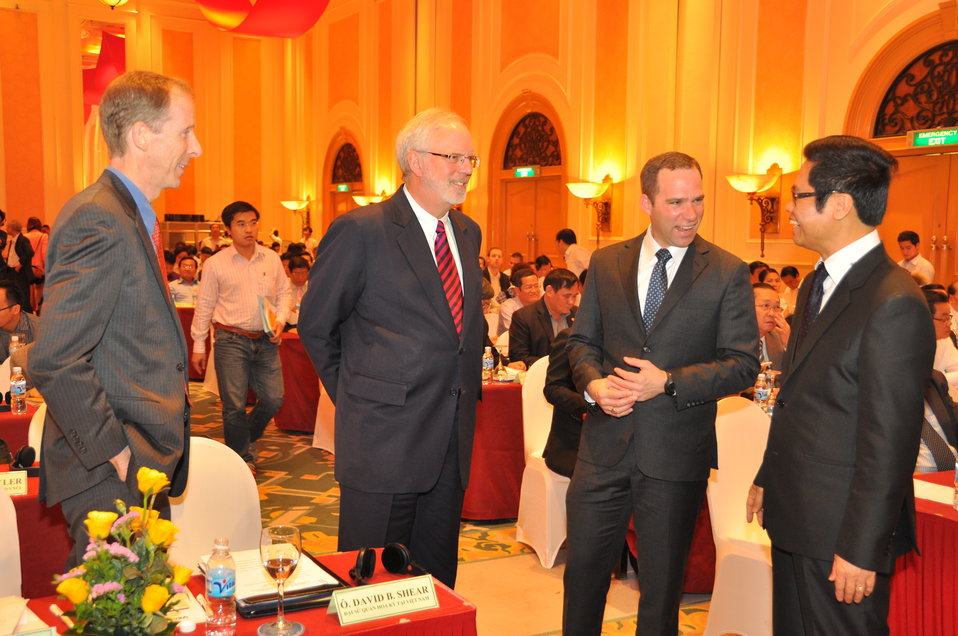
Provincial Competitiveness Index Launch, March 14, 2013

Hanoi, March 13, 2013